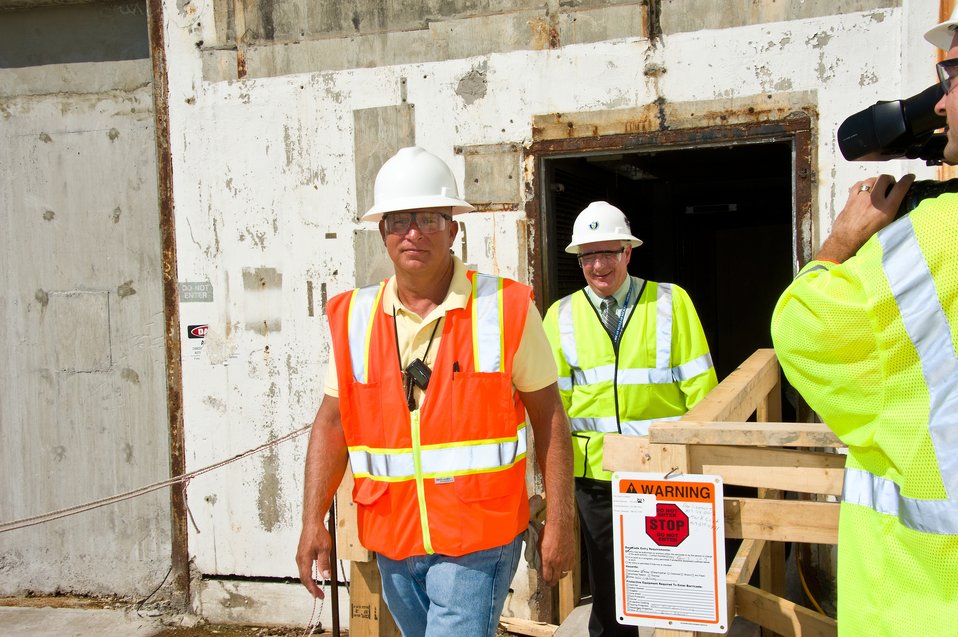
Recovery Act Workers Add Time Capsule Before Sealing Reactor for Hundreds of Years

SRS employee Marc Sharpe, left, and Dr. David Moody,
manager, DOE-Savannah River, were the last people to leave the P Reactor before its opening was welded shut.

The former nuclear reactor is sealed to allow radioactivity to naturally decay.